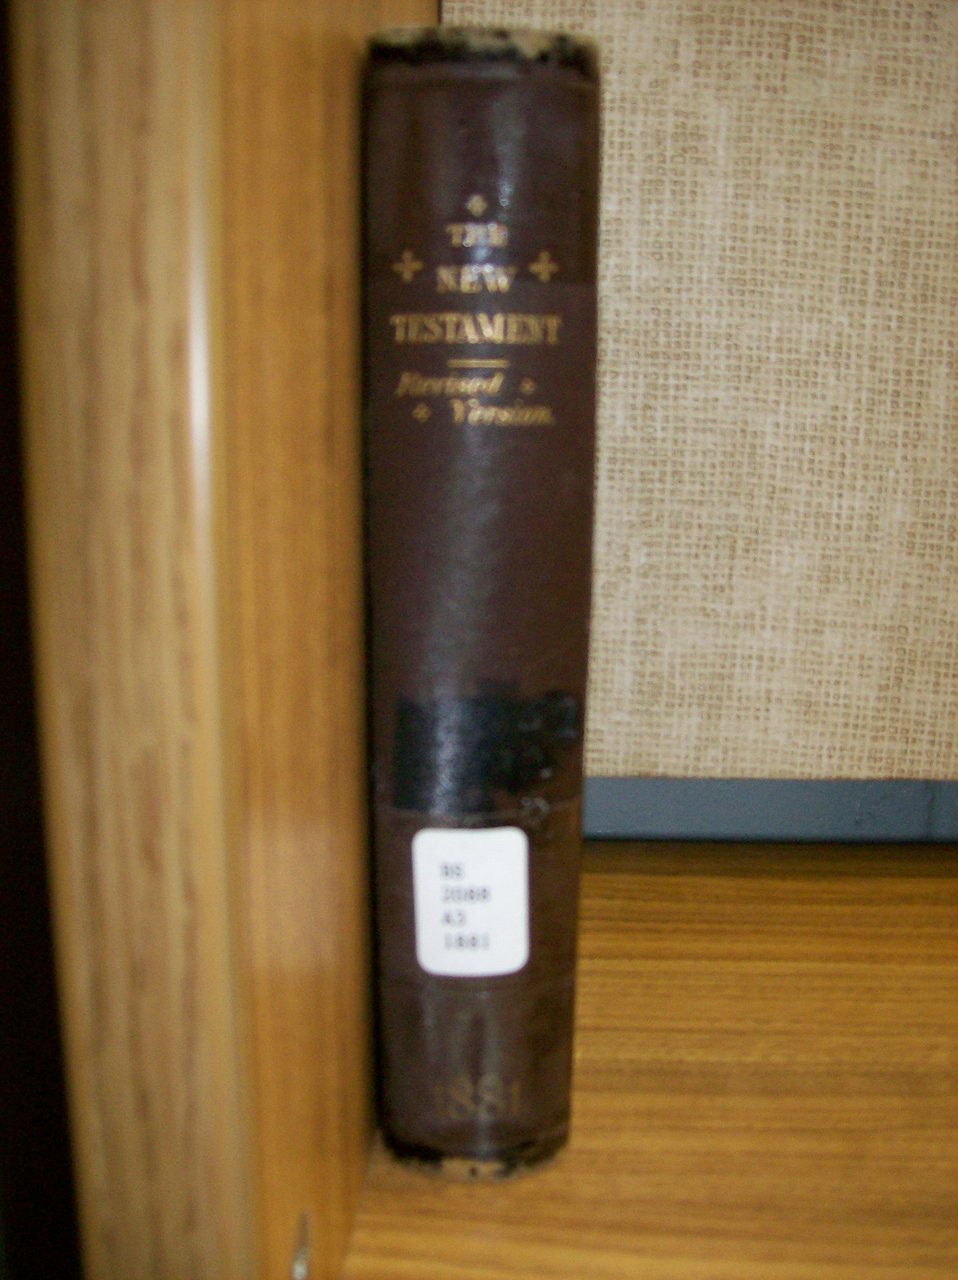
This is a photo I took of an antique copy of the 1881 Revised Version of the New Testament. I found this in the library at Calvary Bible College, hence the library marker on the spine. The photo is all my own work, and the RV Bible has never had any valid copyright in the United States. I intend to use it to illustrate the article on the Revised Version, and I grant anyone who wants to use it the right to do so.